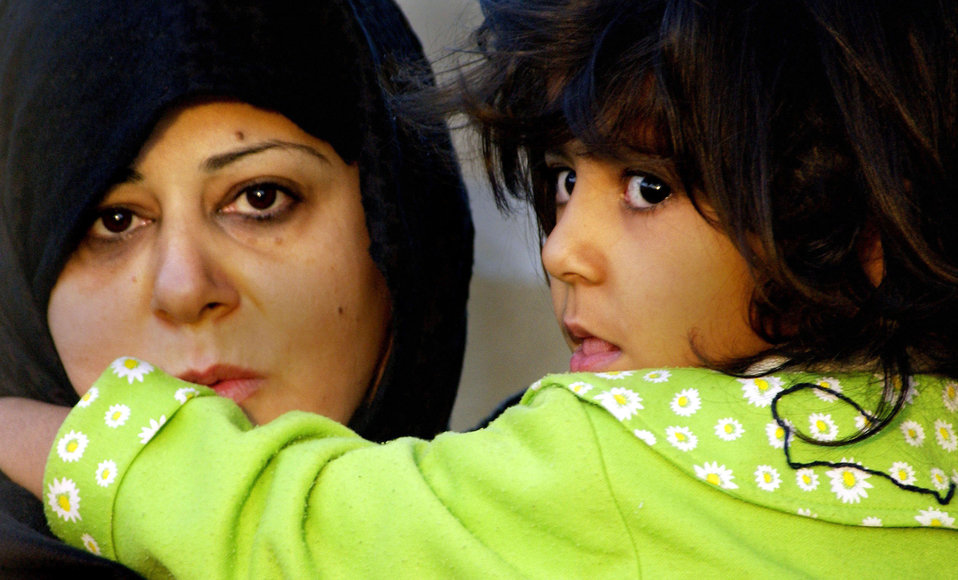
Operation Bayonet Lightning

AL HAWIJAH, Iraq -- A mother and daughter look on as a suspected Ba'th party member is taken from their home as part of Operation Bayonet Lightning. Operation Bayonet Lightning is a joint cordon operation to locate and question persons of interest and as a show of force.